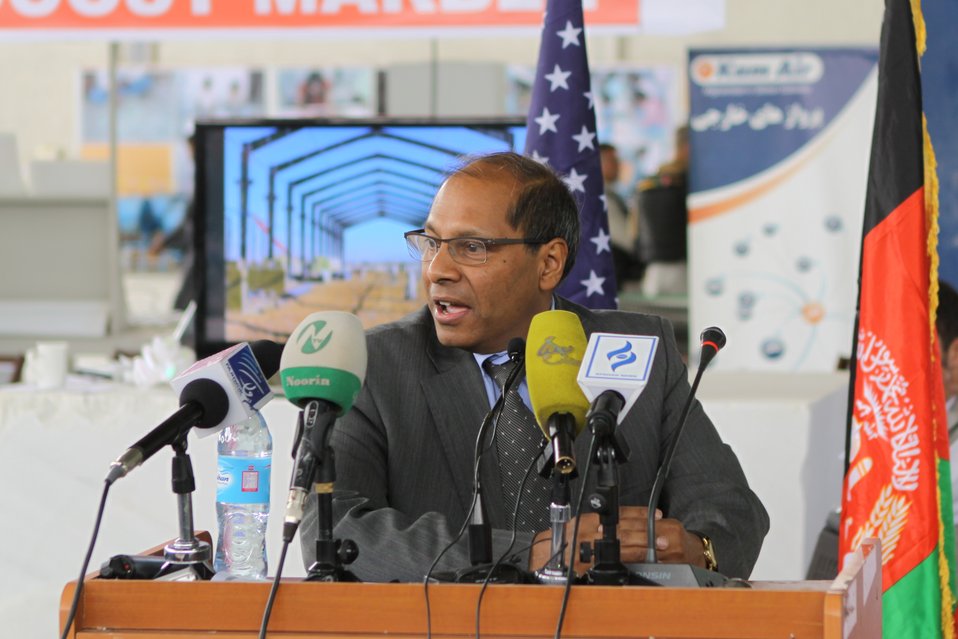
100525 Hirat Marble Conference 262